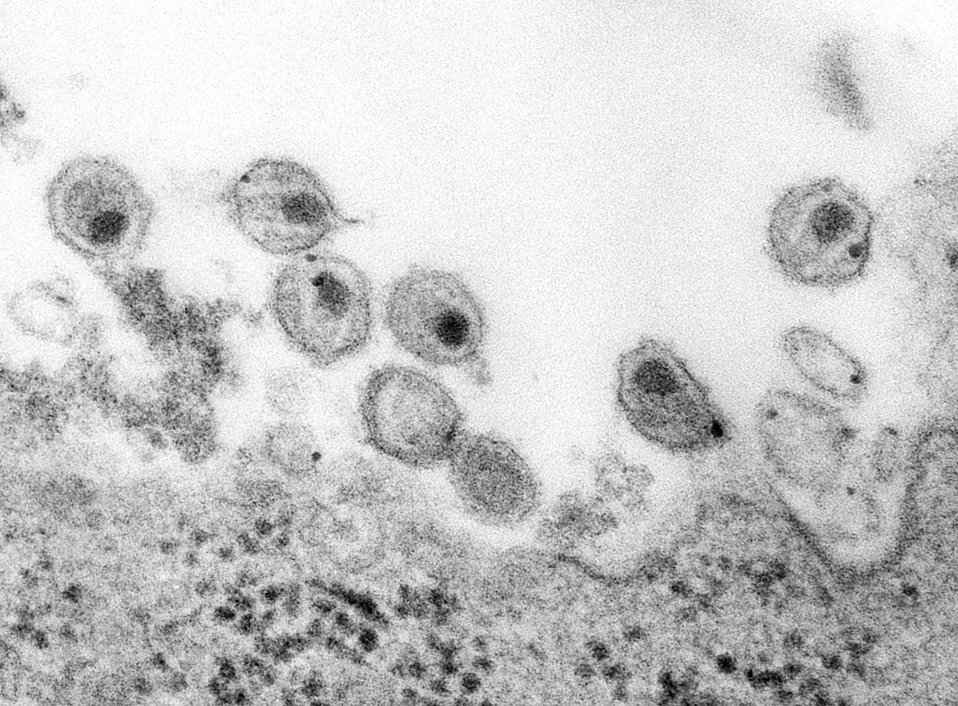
Human immunodeficiency virus (HIV), co-cultivated with human lymphocytes.